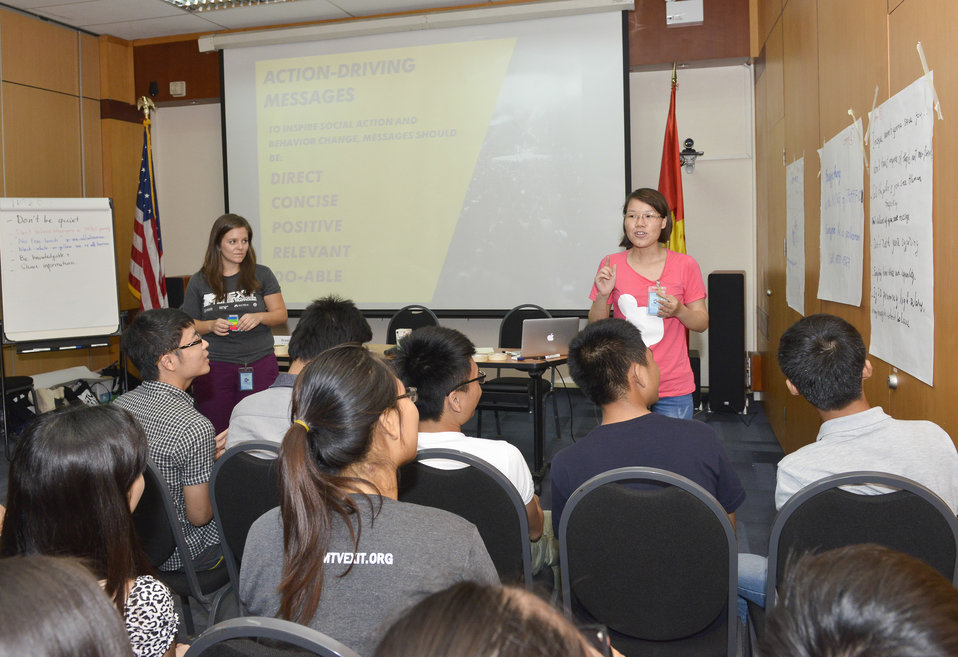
MTV Exit Talk to Engage Students in the Fight against Human Trafficking

Hanoi. June 5, 2014.